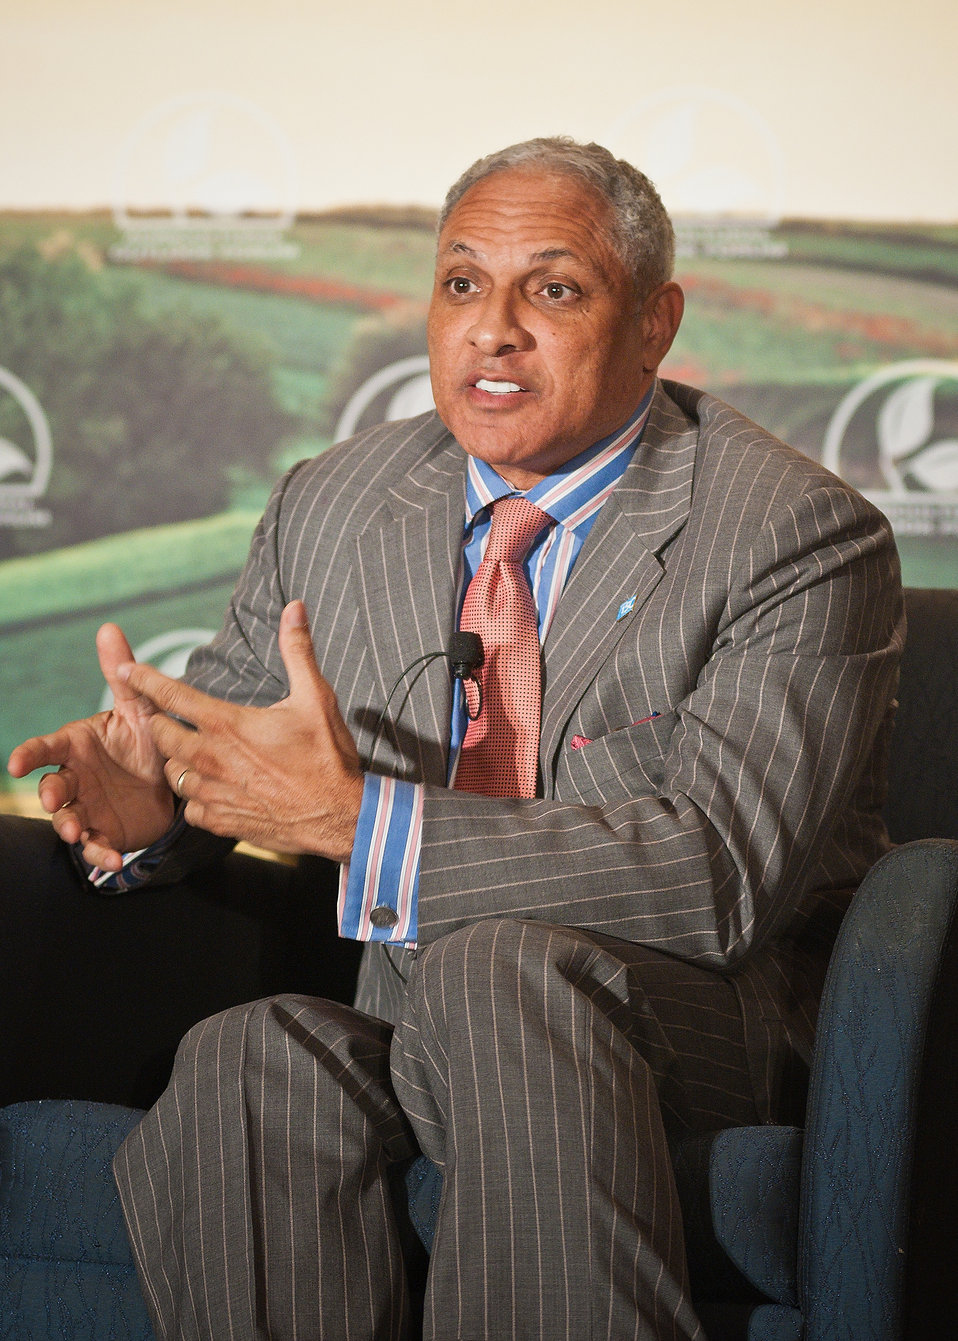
At the 2012 Agricultural Outlook Forum, “Moving Agriculture Forward” in Arlington, VA, held on Thursday, February 23, 2012, 7 former Secretaries of Agriculture sat on the plenary panel “Visions of the Future” hosted by current Agriculture Secretary Tom Vilsack. Congressman Mike Espy (MS) speaks out during the panel discussions.